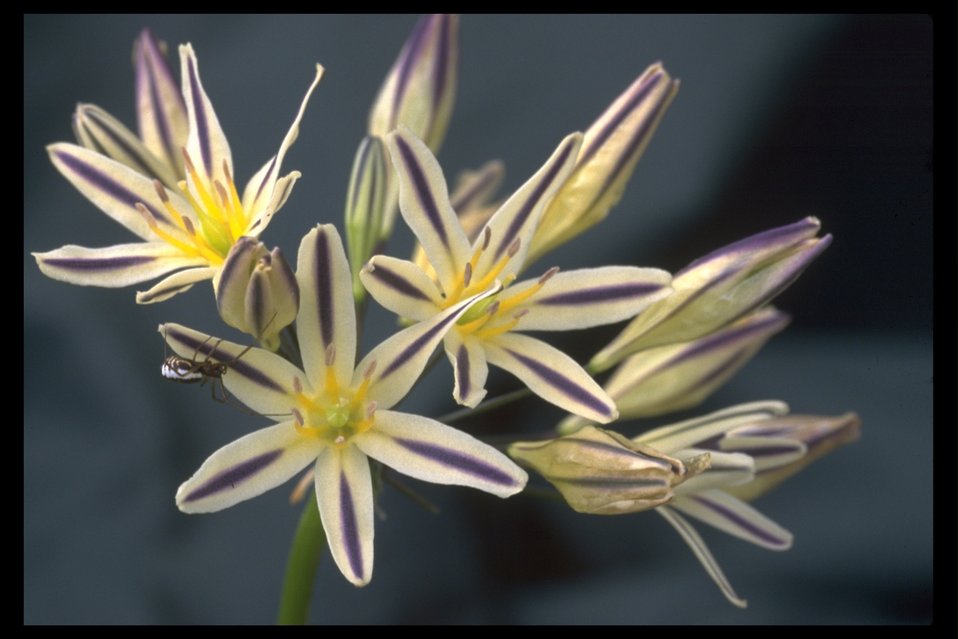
Close up of Henderson's Stars , or Henderson's Brodiaea (Triteleia hendersonii) along West Fork Trail Creek Drainage.